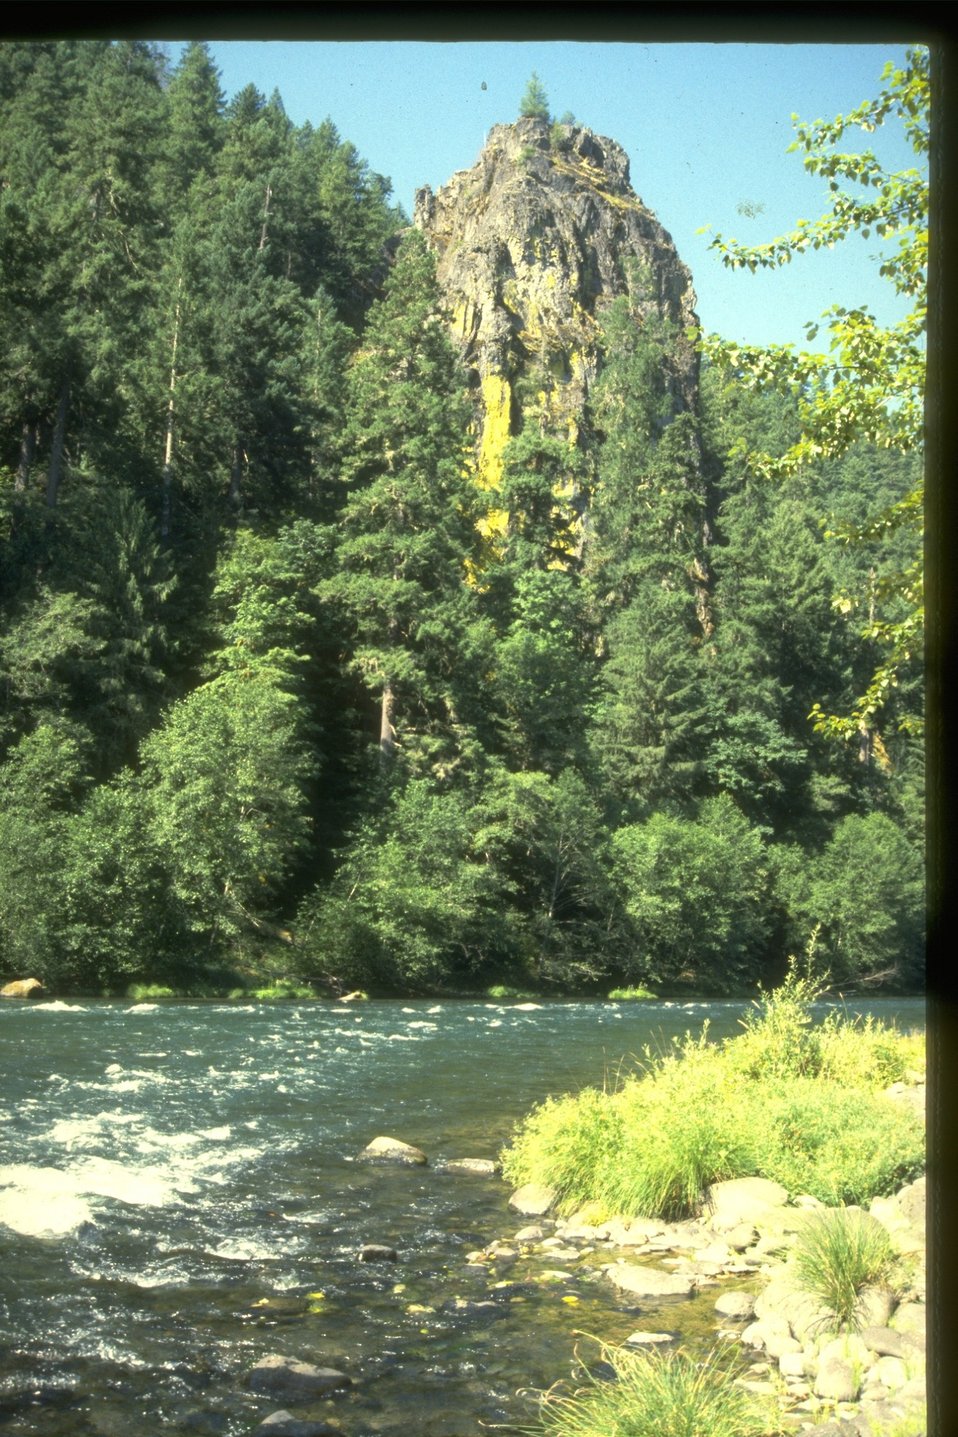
Eagle Rock on the Mckenzie River. Good view of the riparian area.